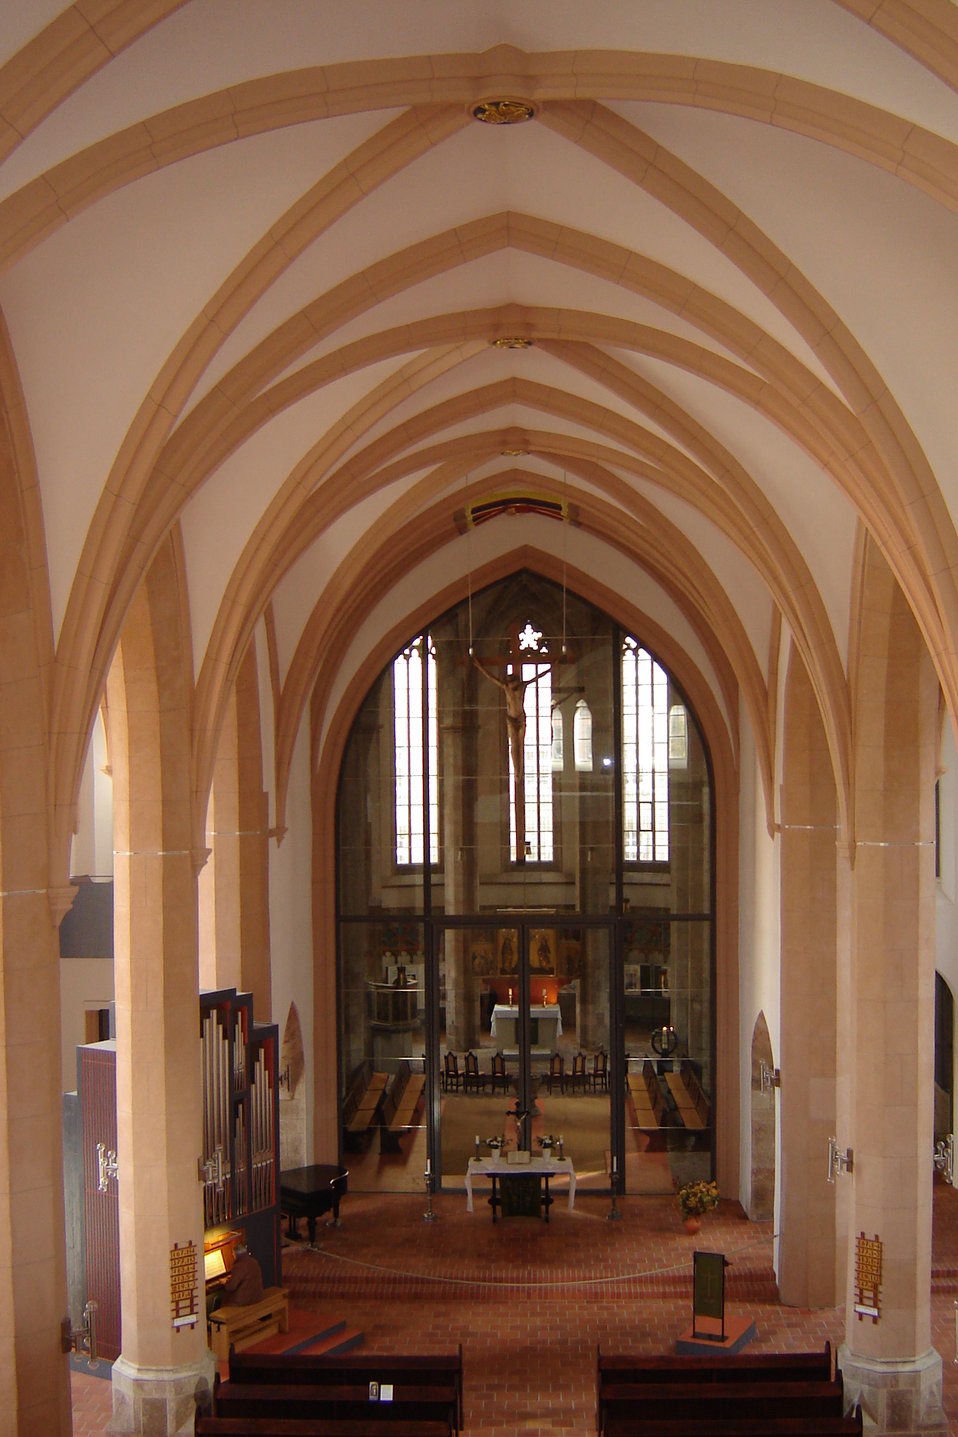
Deutsch: Jakobikirche, Blick von der Westempore in das Mittelschiff zum Chor